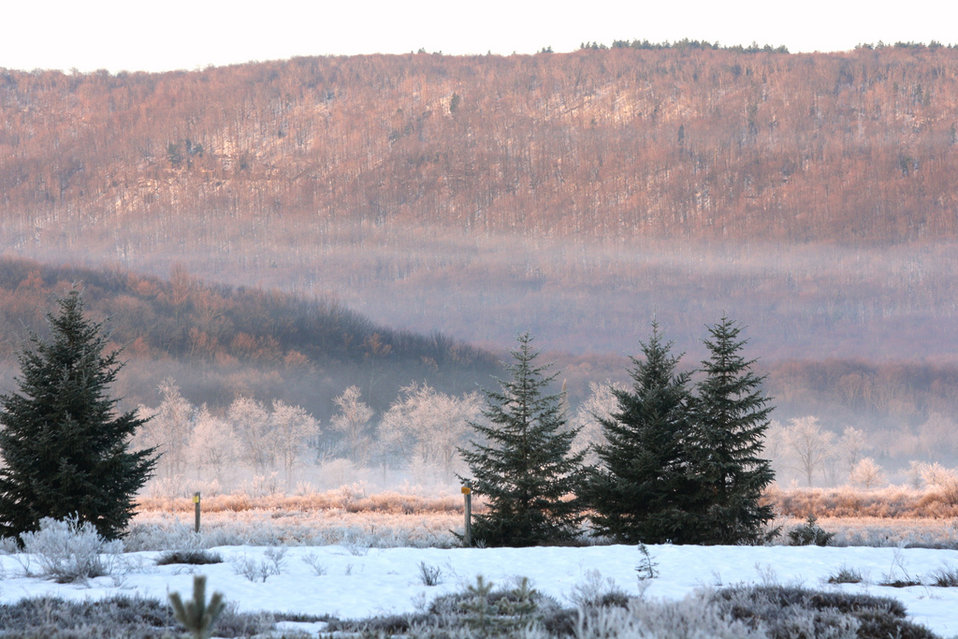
Late Winter Sunrise from Visitor Center